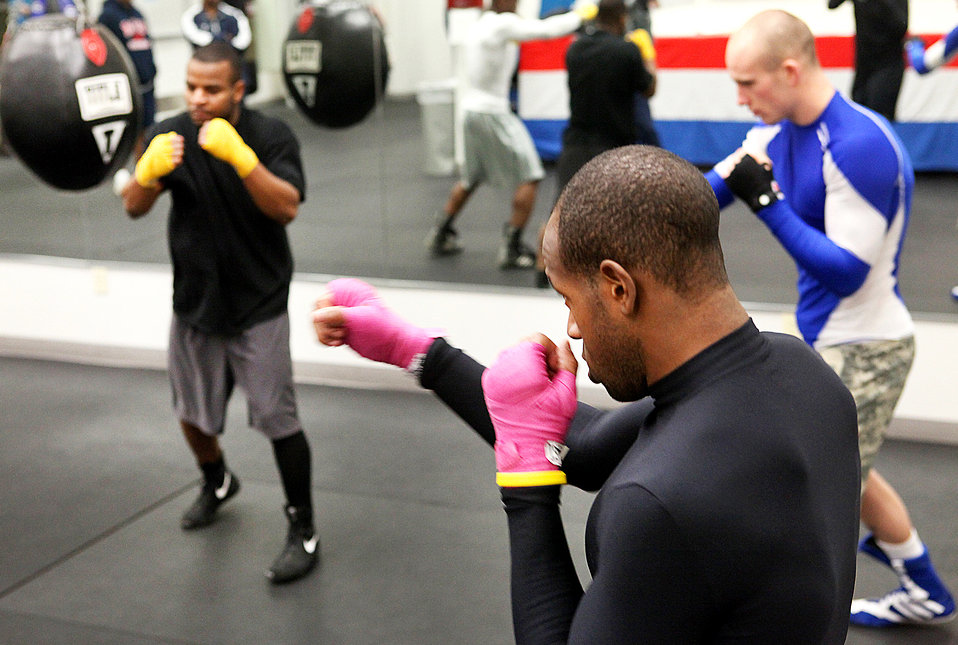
Air Force boxing

Air Force camp boxers work out Jan. 10, 2011, at the boxing gym at Lackland Air Force Base, Texas. Camp began Jan. 8, and continues until the Air Force tournament, the Box-offs, Jan. 22.